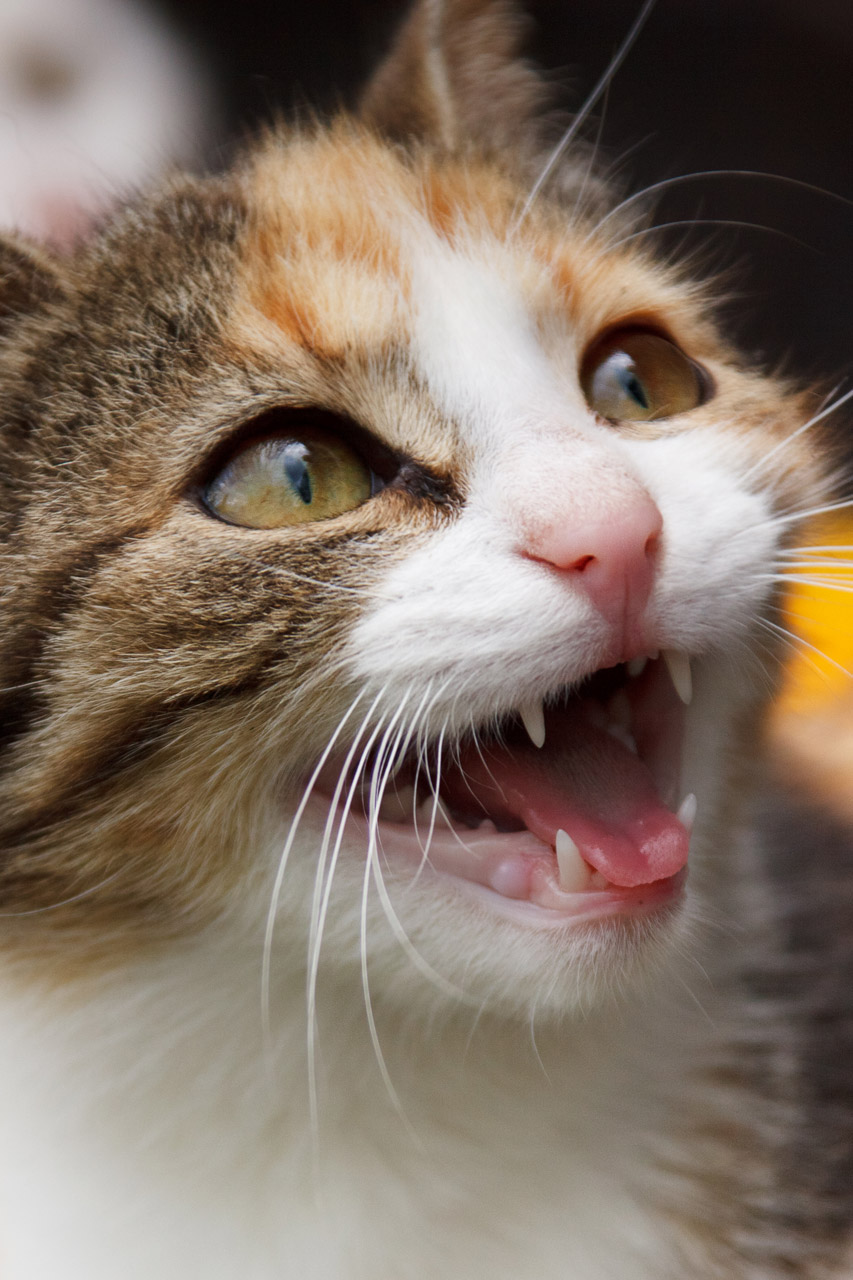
Meowing cat

Young cat showing teeth.